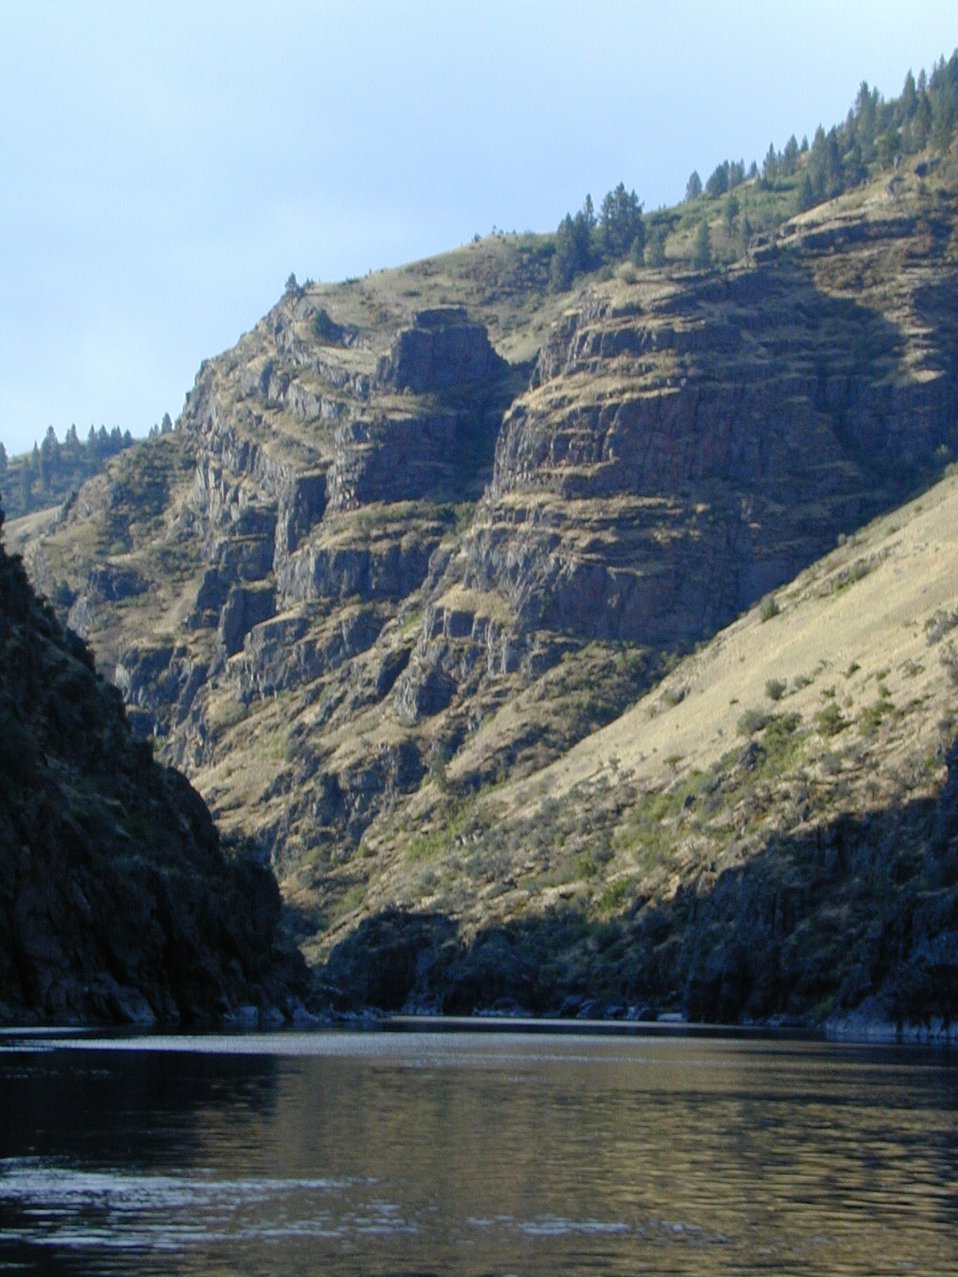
Scenic shot of Lower Salmon River Cottonwood Field Office UCSC Upper Columbia Salmon Clearwater District